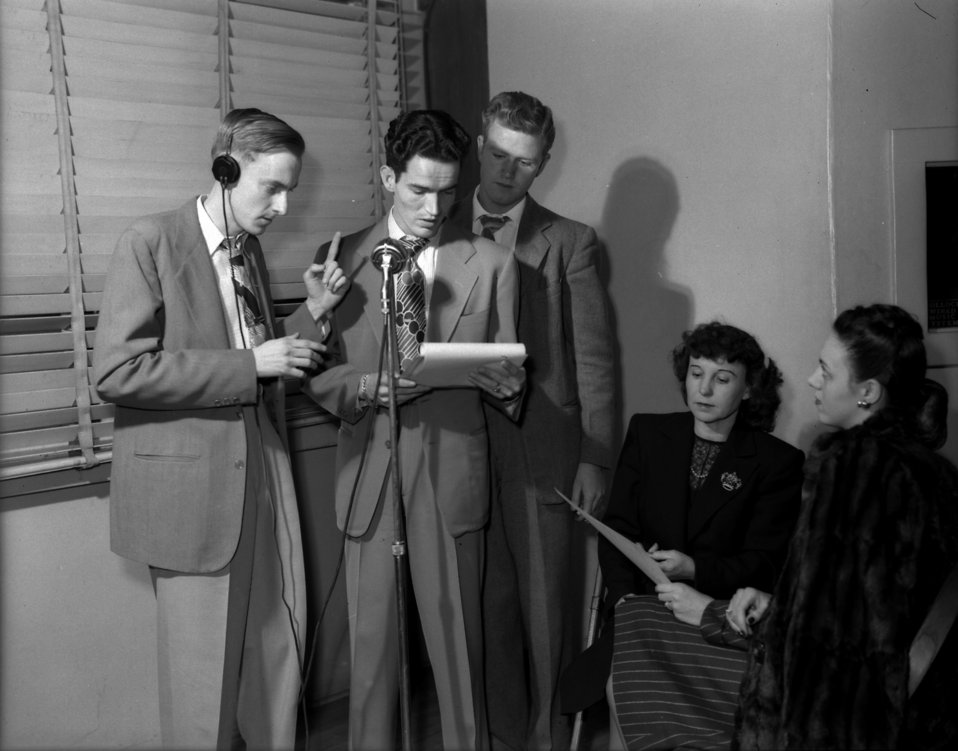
Women's Club Drama Group Rehearsal

004056 DOE photo by Lillian Stokes
Oak Ridge Tennessee 12-4-1947